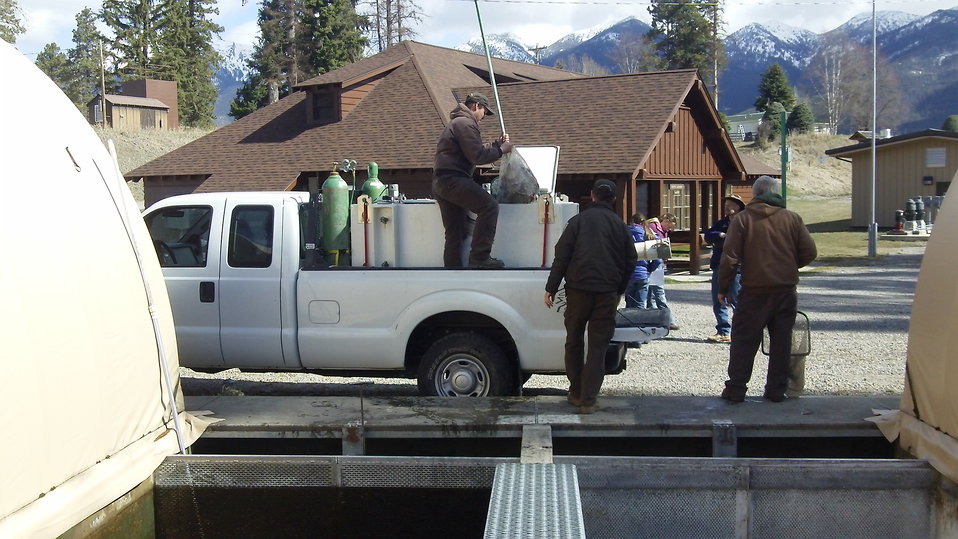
DryBridgeStocking

Creston National Fish Hatchery personnel load fish for stocking at a local family fishing pond.